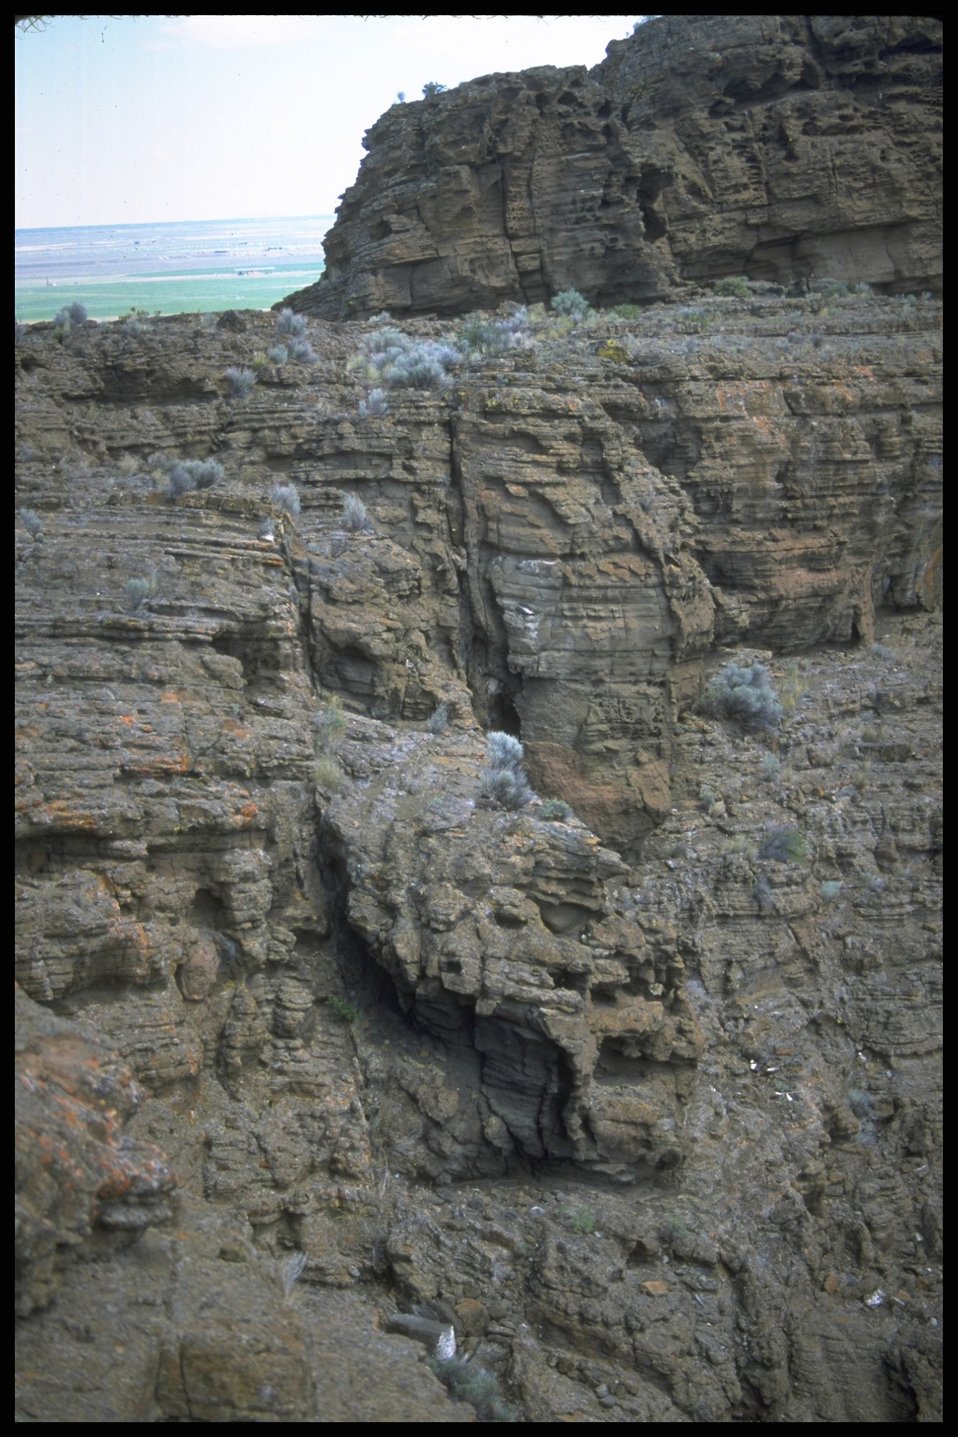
Ft. Rock, as seen from above. Lakeview, District.